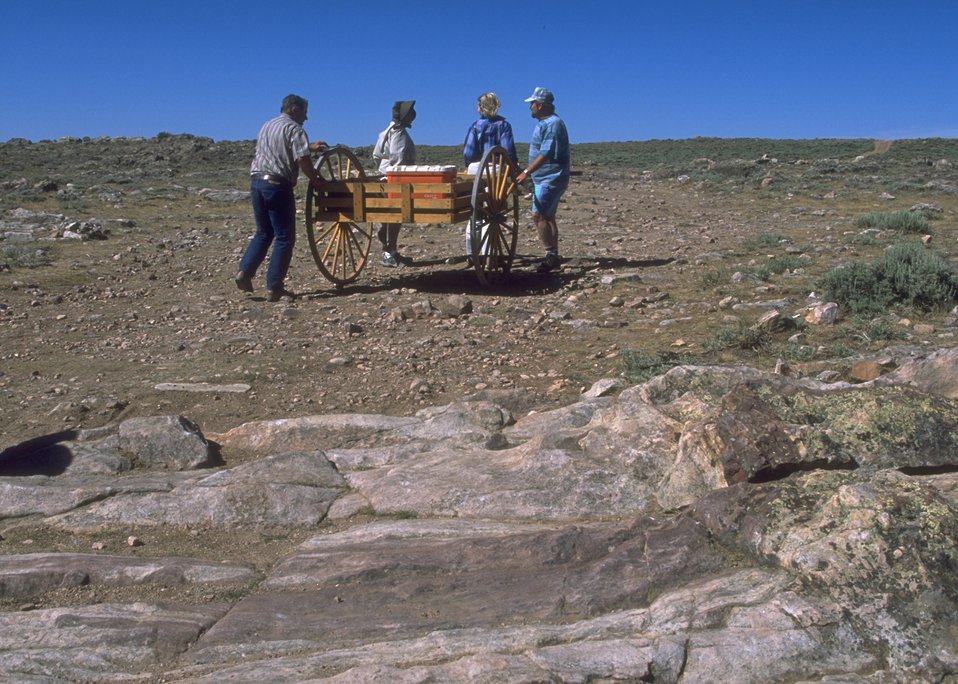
Hand cart re-enactment along the Mormon Trail, Lander Field Office.